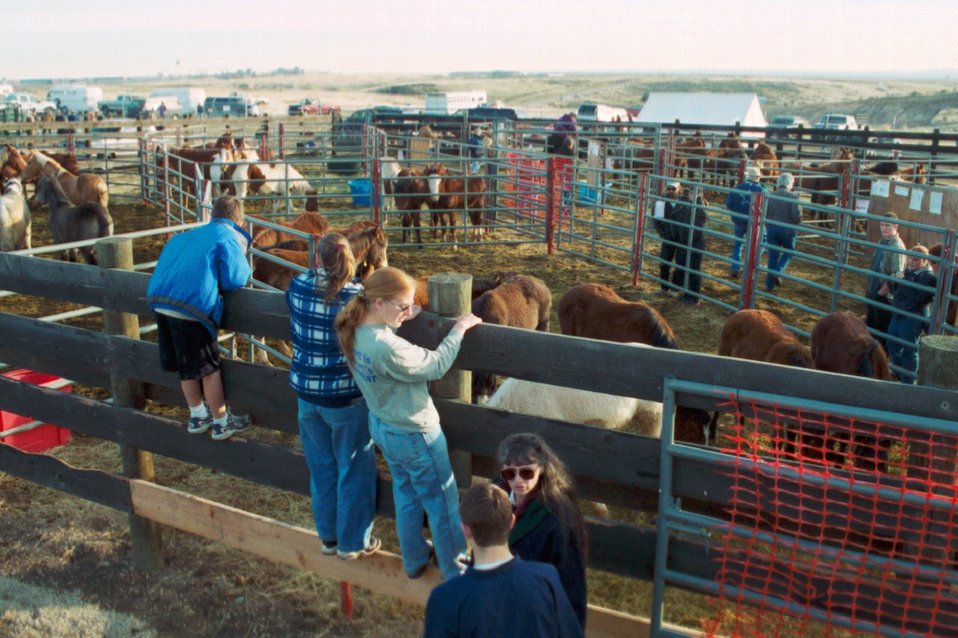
Wild Horse and Burro Adoption